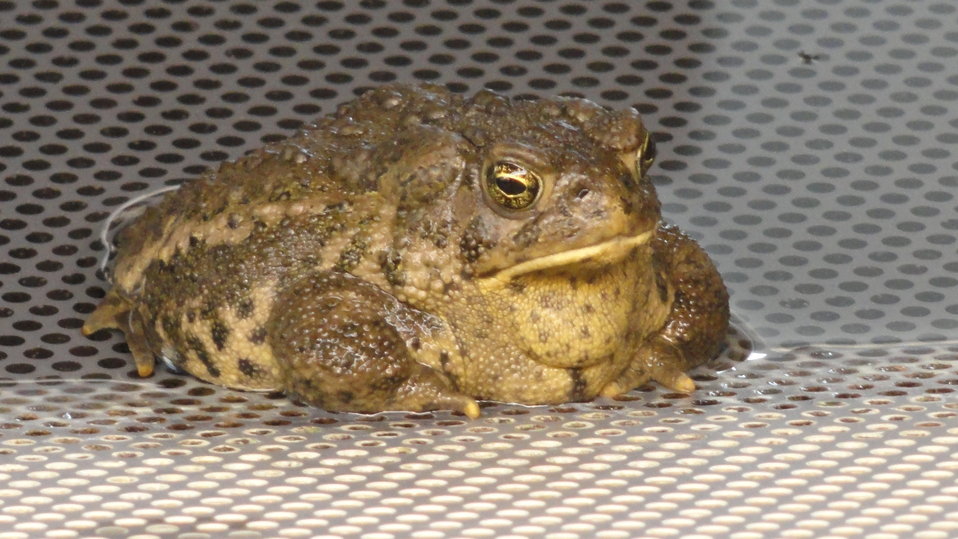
Visiting Saratoga National Fish Hatchery

In April of 2014, regional office employees visited Saratoga National Fish Hatchery to learn more about its efforts towards recovering the Wyoming toad (Bufo baxteri).

The hatchery adopted a unique role in becoming the first unit in the National Fish Hatchery System to become involved in rearing endangered amphibians. The Wyoming toad was a common sight on areas of the Laramie Plains, Albany County, Wyoming, into the early 1970s but the species' populations crashed in the mid-1970s. The Wyoming toad was listed as endangered by the U.S. Fish & Wildlife Service in January 1984. Found only in southwestern Wyoming, the Wyoming toad is considered the most endangered amphibian in North America. The hatchery maintains a captive population for breeding, rearing, and refugia, and the offspring from this program will be used for reintroduction efforts.